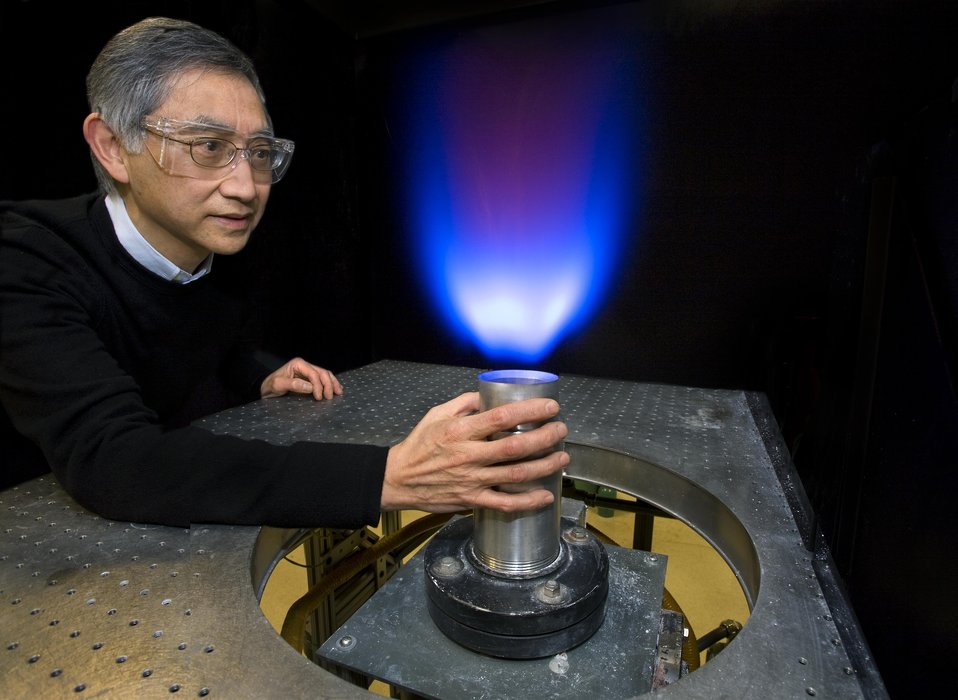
At the Lawrence Berkeley National Laboratory, Robert Cheng views a Low-Swirl Injector (LSI) flame. He is touching the burner, showing that it stays cool because the flame is completely lifted from its body.
An experimental gas turbine simulator equipped with an ultralow-emissions combustion technology called LSI has been successfully using pure hydrogen as a fuel, a milestone that indicates a potential to help eliminate millions of tons of carbon dioxide and thousands of tons of NOx from power plants each year.